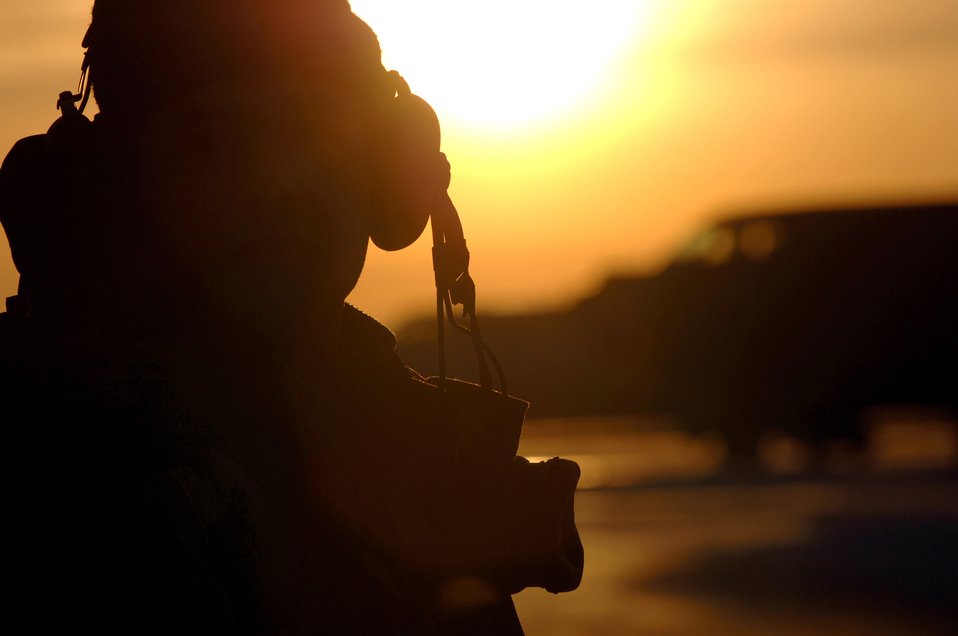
'Buff' launch

MINOT AIR FORCE BASE, N.D. (AFPN) -- Crew chief Staff Sgt. Christopher Oliva prepares to help launch his B-52H Stratofortress on a mission. Nine of the huge bombers took part in a rapid-launch exercise to test the base's ability to respond quickly to national directives. Sergeant Oliva is with the 5th Aircraft Maintenance Squadron.